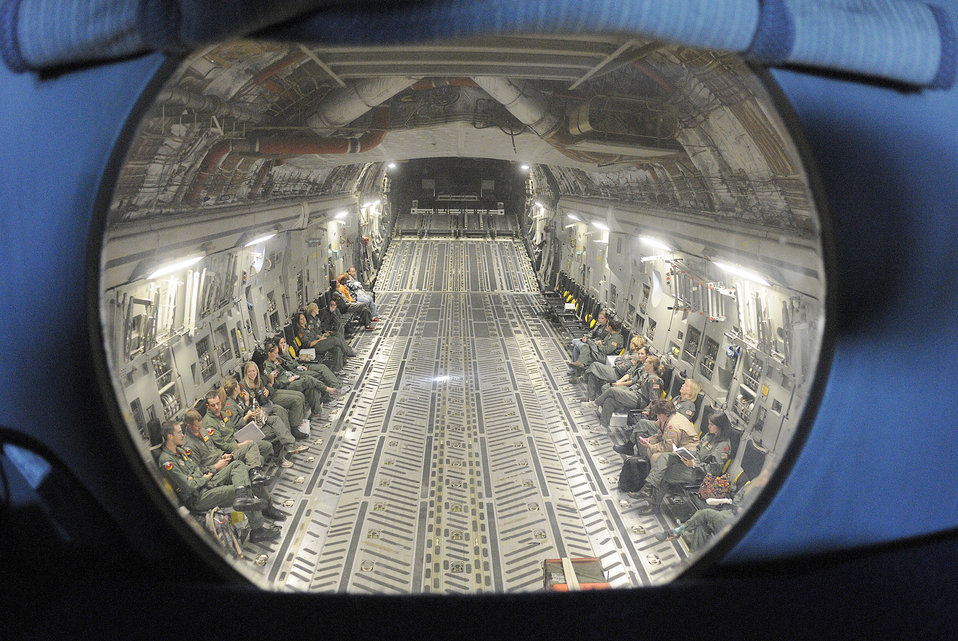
Walking in their shoes

More than 60 spouses of military members flew on an orientation flight during a routine training mission onboard a C-17 Globemaster III from Joint Base Charleston, S.C., Oct. 16, 2010. The flight provided insight to what the military members do in everyday operations. Some of the spouses are wearing flight suits.